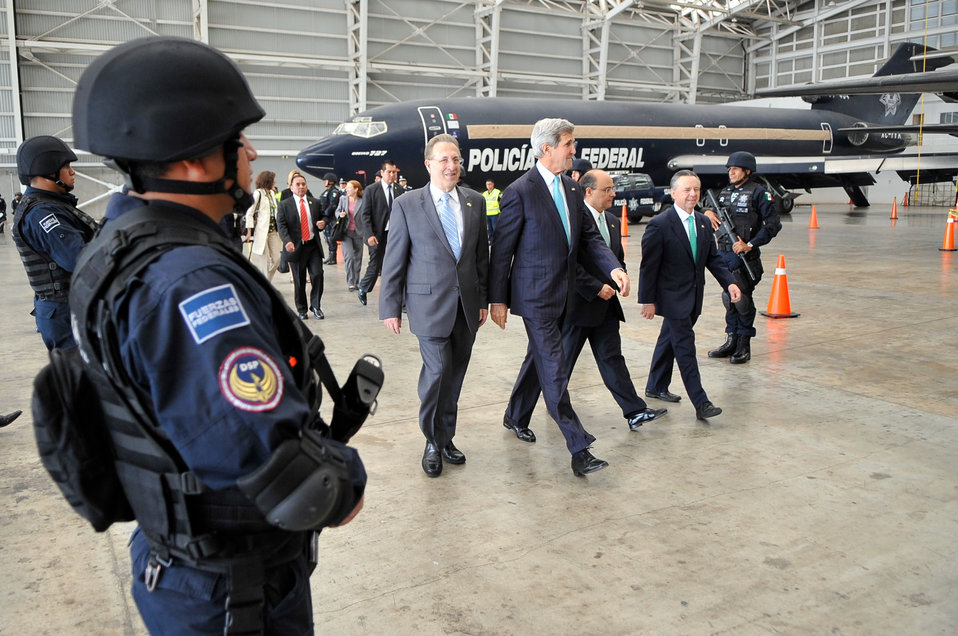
Secretary Kerry Walks Through Police Honor Guard Upon Arrival In Mexico City

U.S. Secretary of State John Kerry, accompanied by U.S. Ambassador to Mexico Anthony Wayne, pass through a Police Honor Guard upon arrival in Mexico City, Mexico, on May 21, 2014.